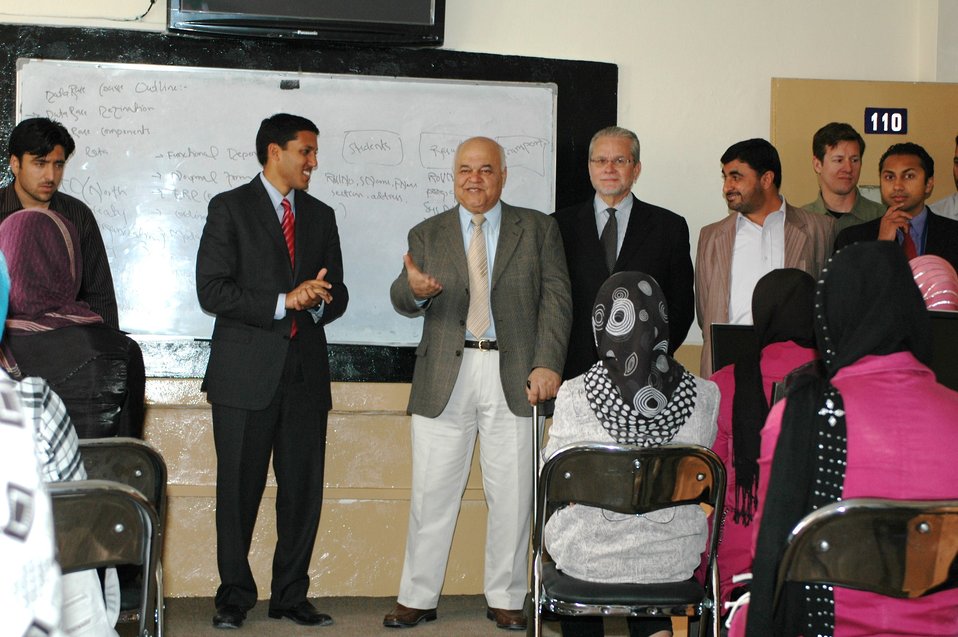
Dr Shah Visits Votech in Kabul